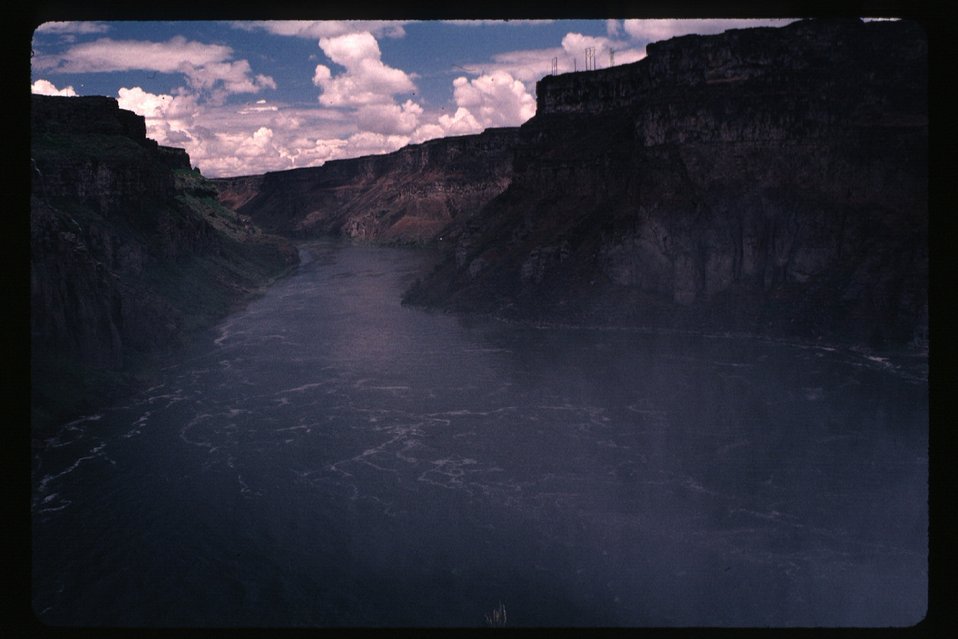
Water falls Rapids Recreation Scenic Snake River Jarbidge Field Office LSRD Lower Snake River District